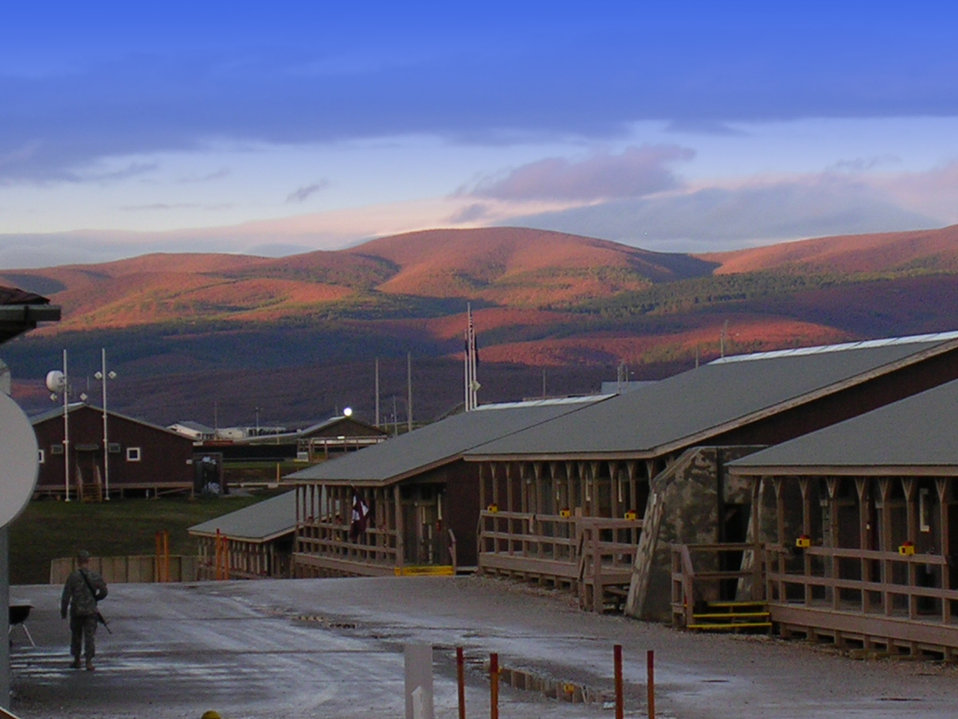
Peacekeeping mission continues for Airmen in Kosovo

A view of Camp Bondsteel and the surrounding landscape in Kosovo.